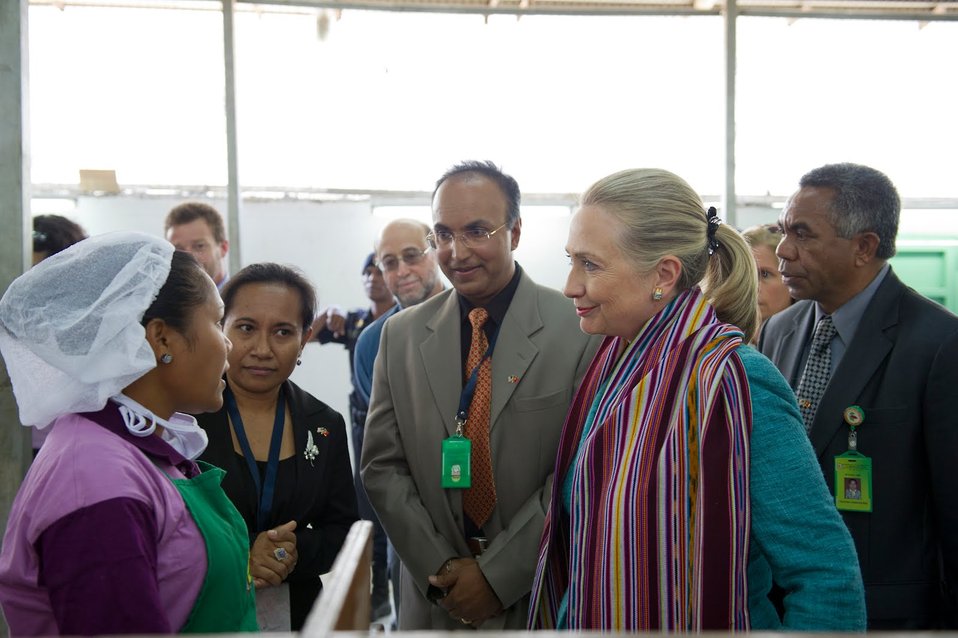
Secretary Clinton at Cooperativa Cafe Timor

U.S. Secretary of State Hillary Clinton speaks with an employee at the Cooperativa Cafe Timor in Dili, Timor-Leste, September 6, 2012. She is accompanied by Chief of Maternal-Child Health Marce Berry, Project Advisor Bency Issacs, and Cooperative Chairman Germanino Amaral. Launched in 1994 by USAID, the cooperative now brings income to over 21,000 families in Timor-Leste.